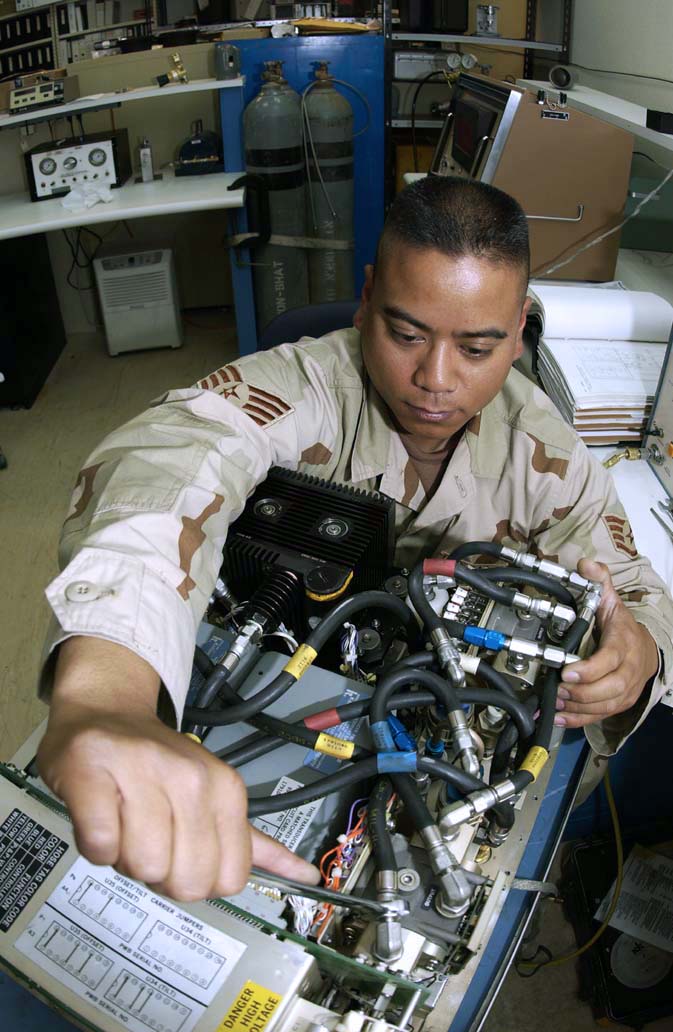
PMEL Airmen ensure equipment is ready for fight

SOUTHWEST ASIA -- Staff Sgt. Freddie Marinas checks for leaks and adjusts the altitude setting on a pressure/temperature test set. He is assigned to the 379th Expeditionary Maintenance Squadron's precision, measurement and equipment laboratory, and he is deployed from Langley Air Force Base, Va.